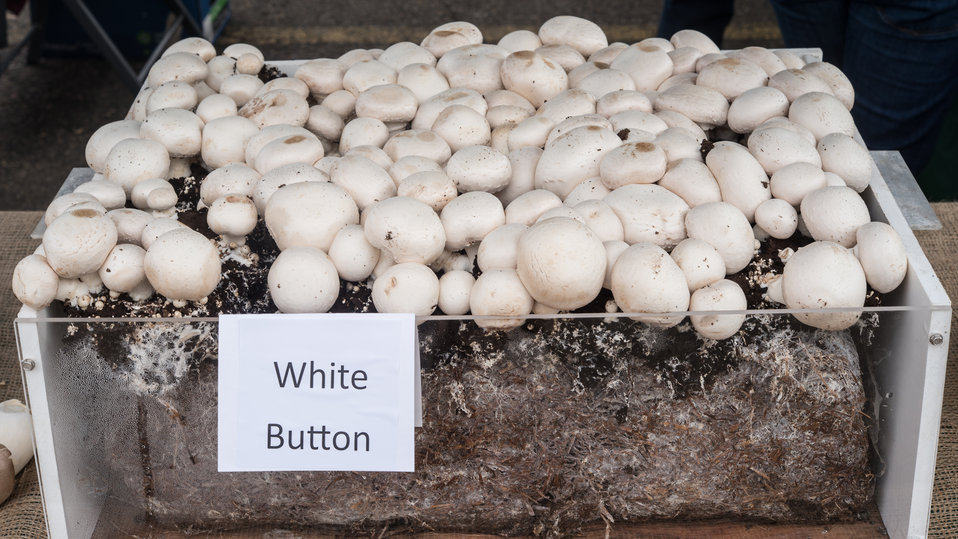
White button mushrooms on display at the U.S. Department of Agriculture (USDA) farmers markets and Harvest Festival at the USDA Whitten Building east parking lot in Washington, DC, on Friday, November 22, 2013.